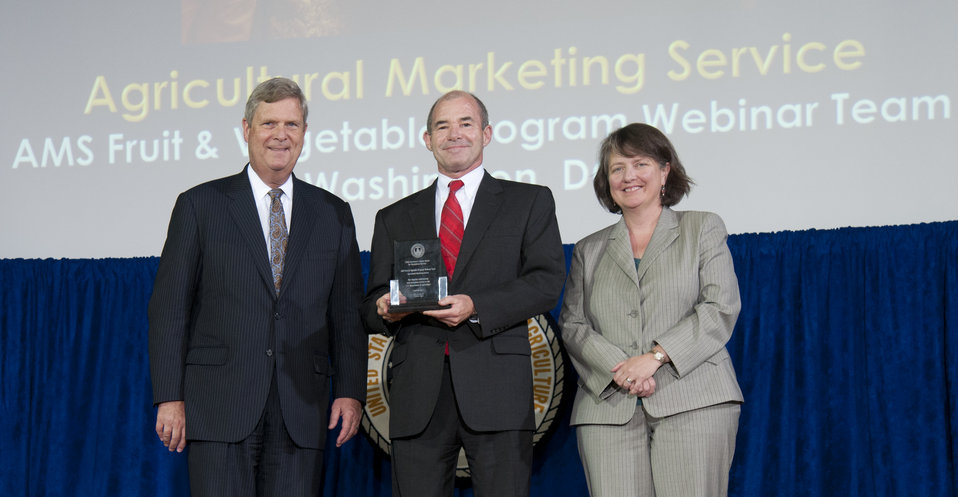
Agriculture Secretary Tom Vilsack and Agriculture Deputy Secretary Kathleen Merrigan present the Secretary’s Honor Award to the Fruit and Vegetable Program Webinar Team Agricultural Marketing Service (AMS) group leader Christopher A. Purdy at the U.S. Department of Agriculture (USDA) 64th Annual Honor Awards Ceremony in Washington, D.C. on Wednesday, Sept. 12, 2012. The AMS Fruit and Vegetable Program Webinar Team developed and delivered an educational webinar series that helps small and socially disadvantaged fruit and vegetable farmers and others thrive economically.